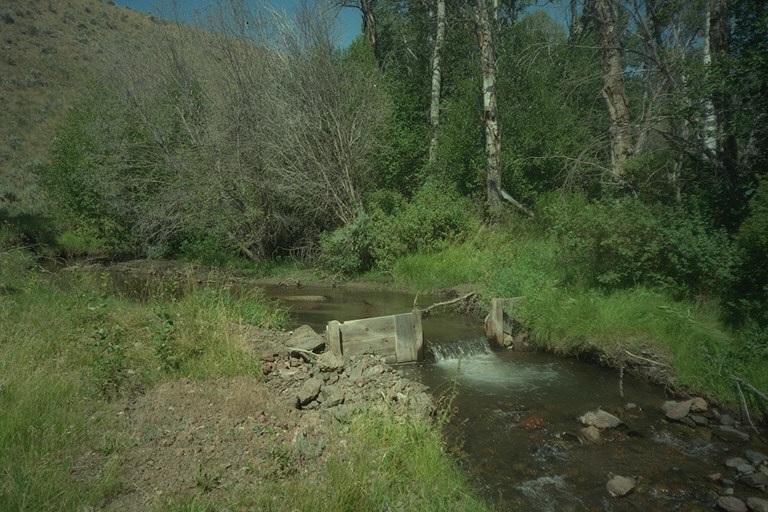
Riparian area Public Lands Salmon Field Office UCSC Upper Columbia Salmon Clearwater District